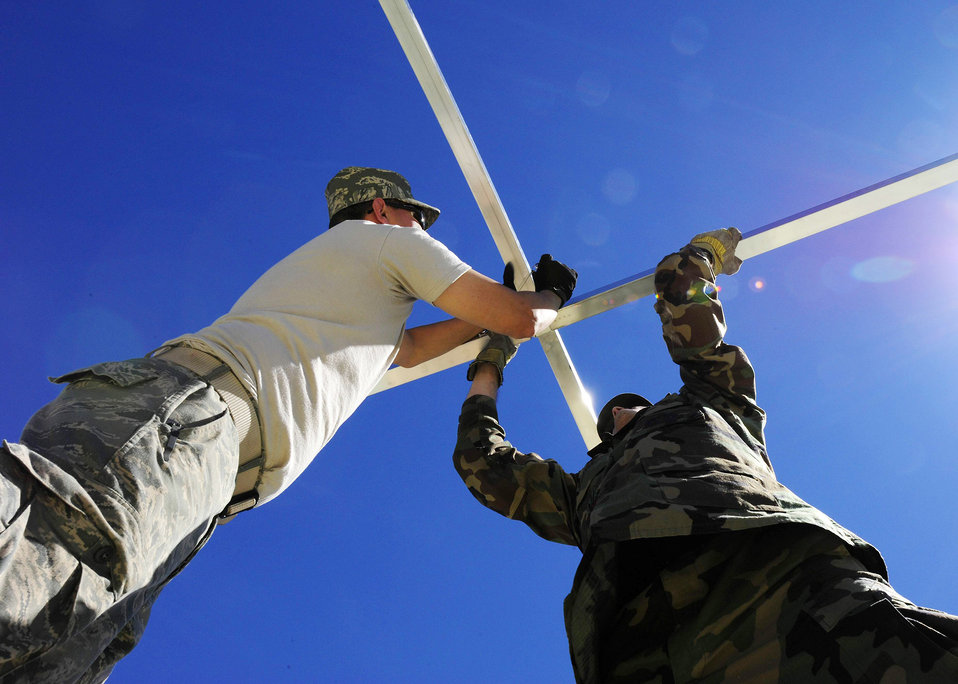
Airmen build hospital in Chile

Staff Sgt. Abraham Rodriguez and Maj. James Dahle lock the cross bars of a newly constructed mobile hospital March 10, 2010, in Angol, Chile. The Airmen are part of an Air Force Expeditionary Medical Support team building a mobile hospital here to help augment medical services for nearly 110,000 Chileans in the region. Sergeant Rodriguez is a translator from the Air Force School of Aerospace Medicine at Brooks City-Base, Texas. Major Dahle is a 633rd Medical Operations Squadron emergency physician from Joint Base Langley-Eustis, Va.